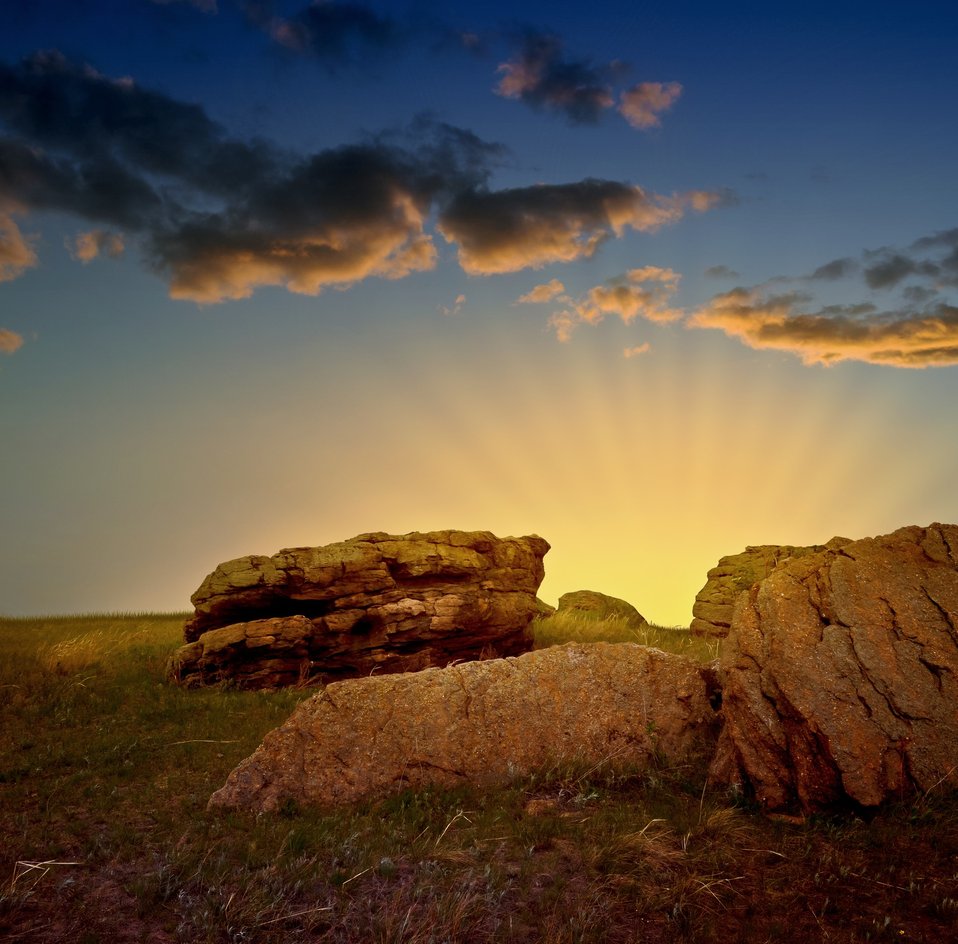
Rocks at sunset

A collage of pictures of me.